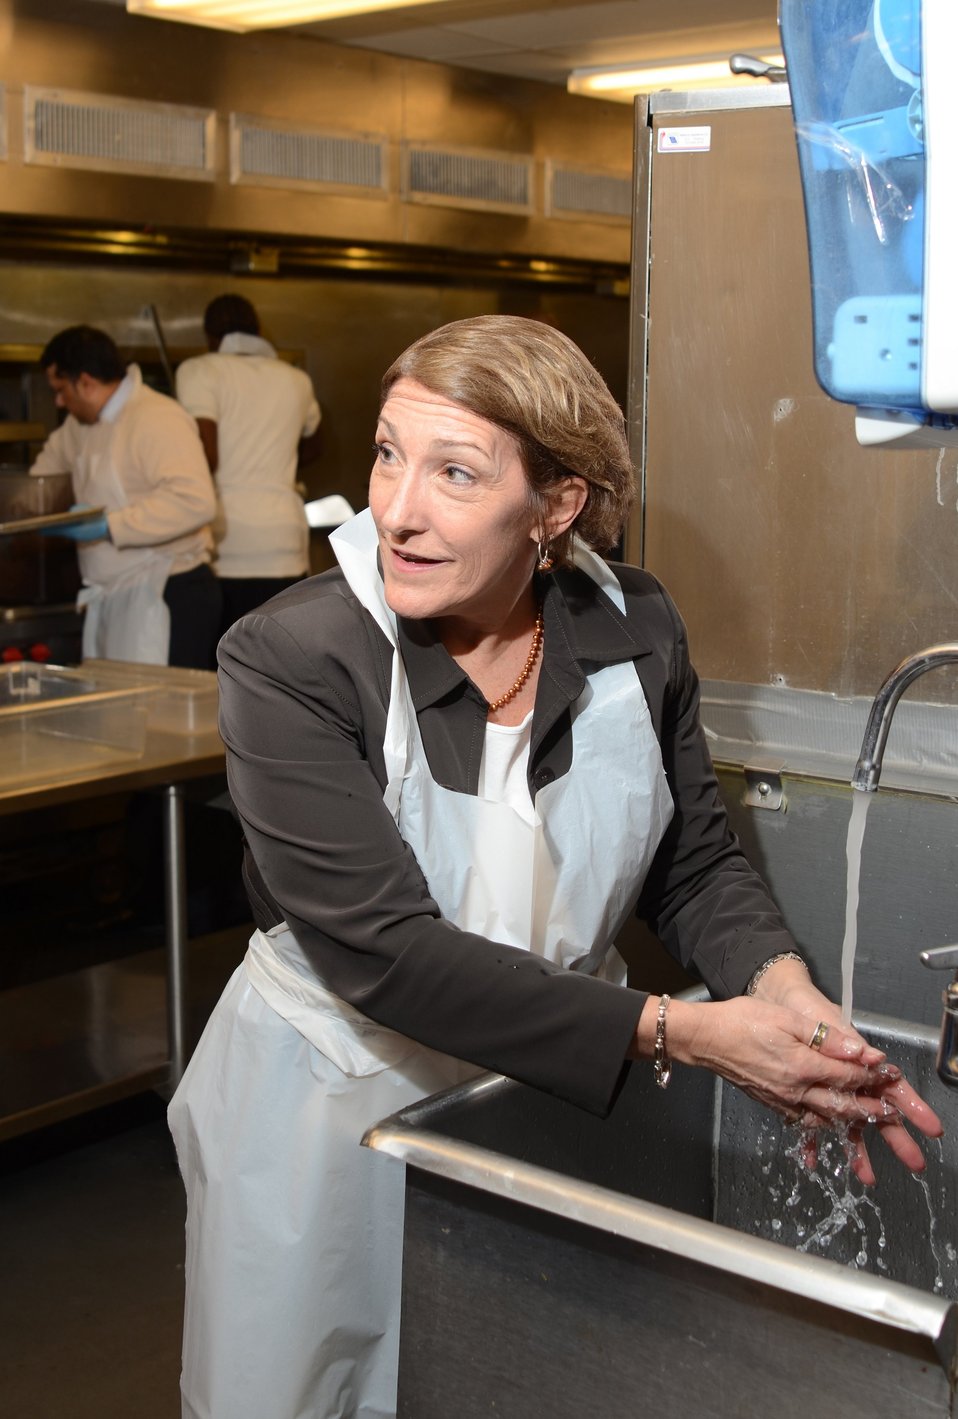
Louise Fox, Departmental Management washes her hands before preparing the evening meal at the D.C. Central Kitchen during USDA’s National Service Day on January 12, 2012. NSD honors Dr. Martin Luther Kings’s contributions to the Civil Rights Movement. The D.C. Central Kitchen turns leftover food into millions of meals for thousands of at-risk individuals while offering nationally recognized culinary job training to once homeless and hungry adults.